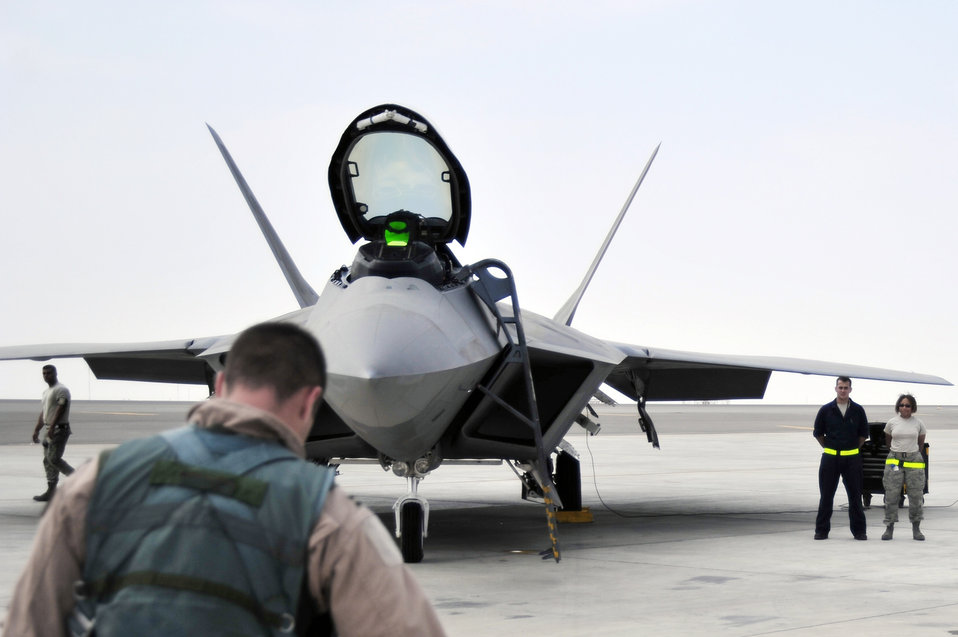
Raptors fly in Iron Falcon

Capt. Matthew Howard, 1st Fighter Wing pilot, prepares to board an F-22 Raptor Nov. 30, 2009, at an airfield in Southwest Asia. Captain Howard is participating in the Iron Falcon exercise while on temporary duty from Langley Air Force Base, Va. He is from Warrensburg, Mo.